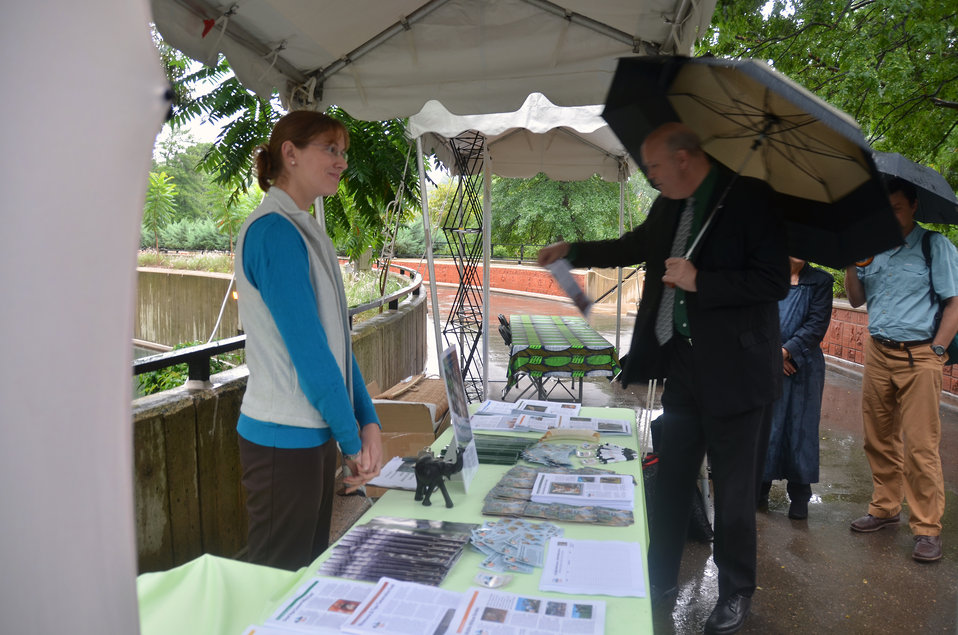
Save Vanishing Species Stamp First Day of Issue